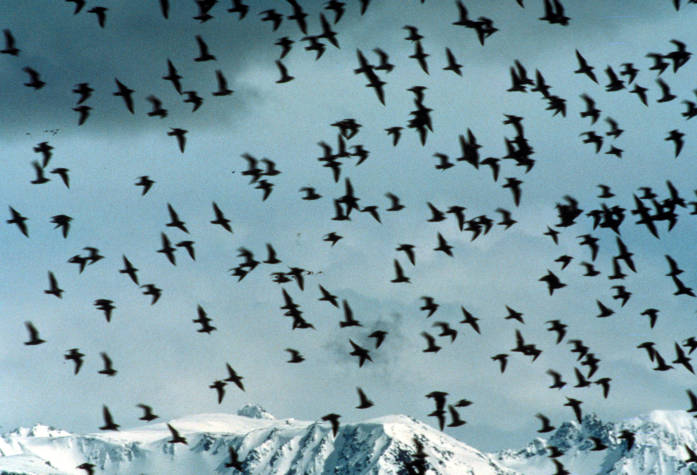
shorebirds, Kachemak Bay Festival